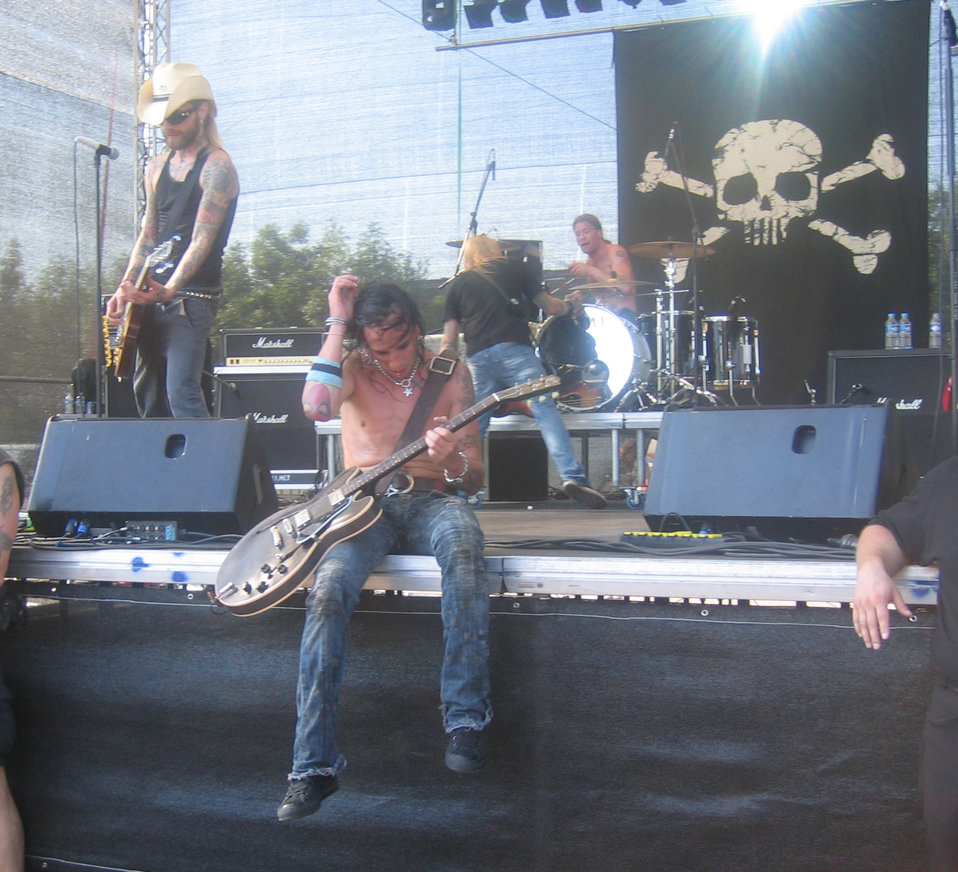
Die Backyard Babies auf dem Vainstream Festival 2006 in Münster